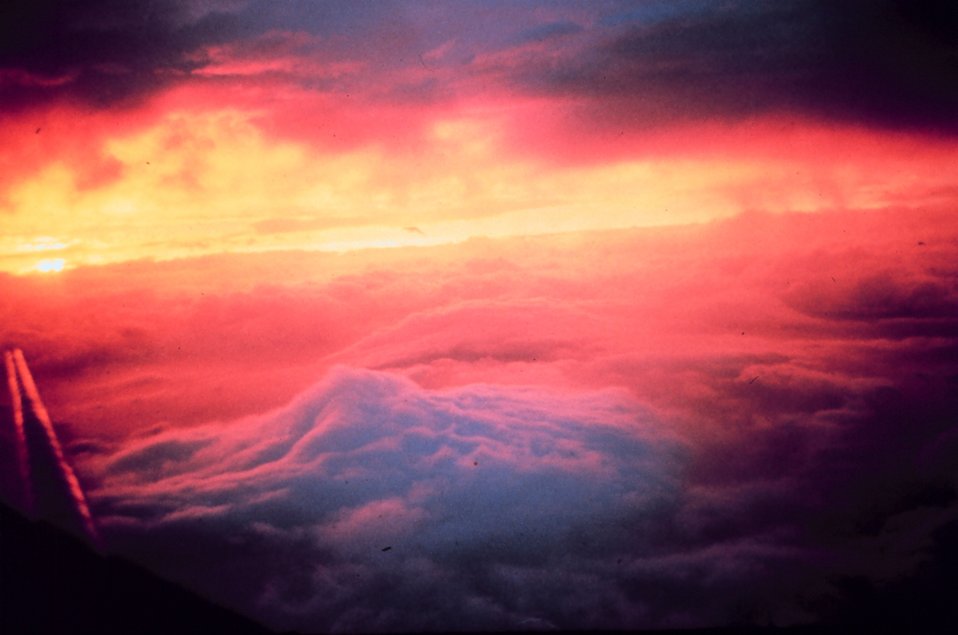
Sunset in the eye of a hurricane.